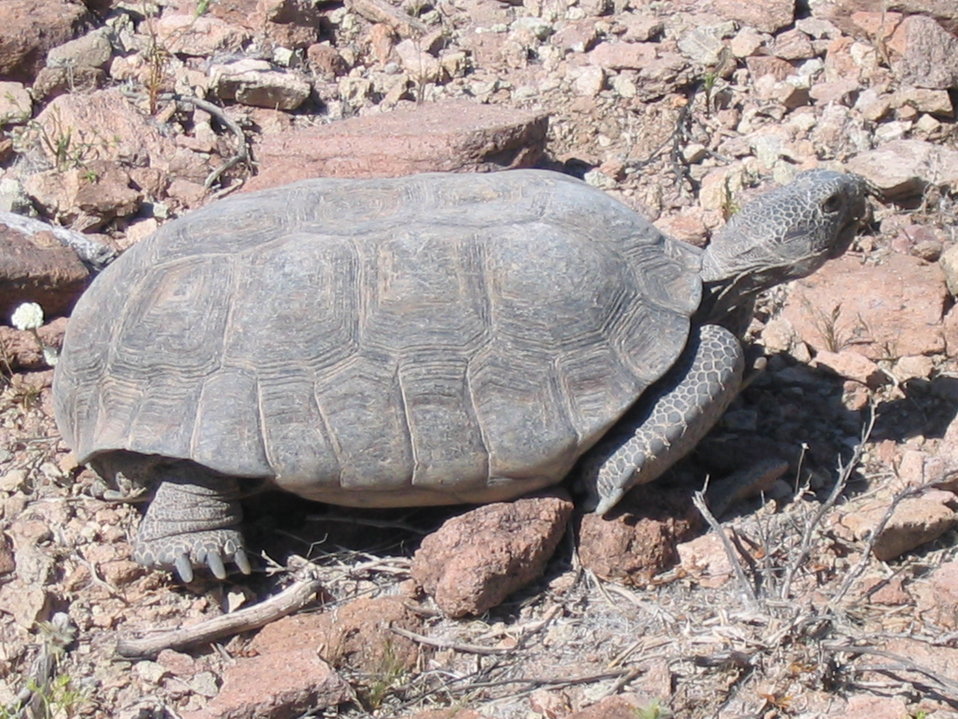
Mojave Desert Tortoise (Gopherus agassizii)

Desert tortoise (Gopherus agassizii) commonly known as the Mojave desert tortoise.